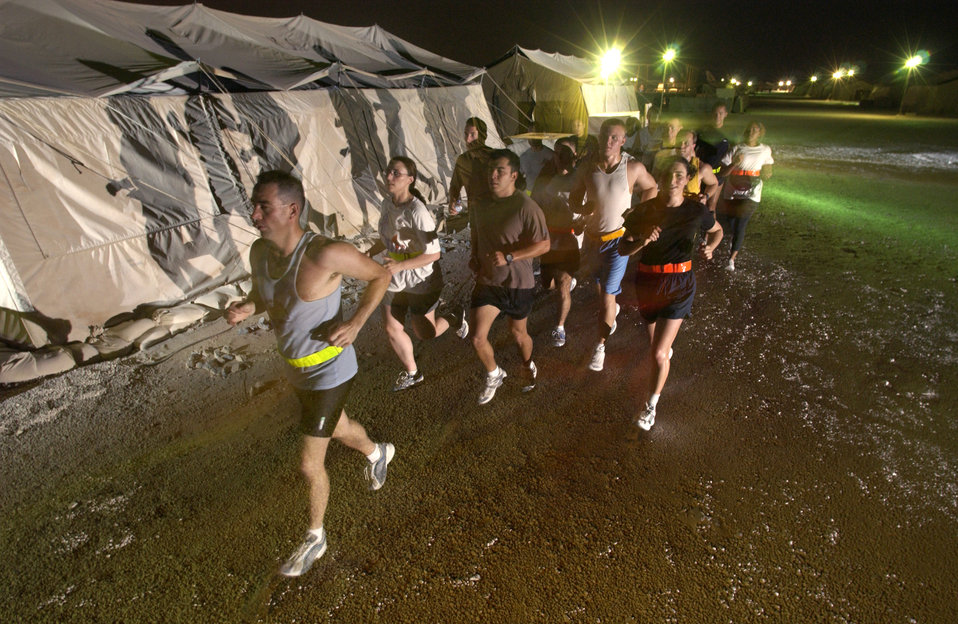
Airmen brace for new fitness test

AL UDEID AIR BASE, Qatar -- Airmen from the 379th Air Expeditionary Wing here participate in an evening